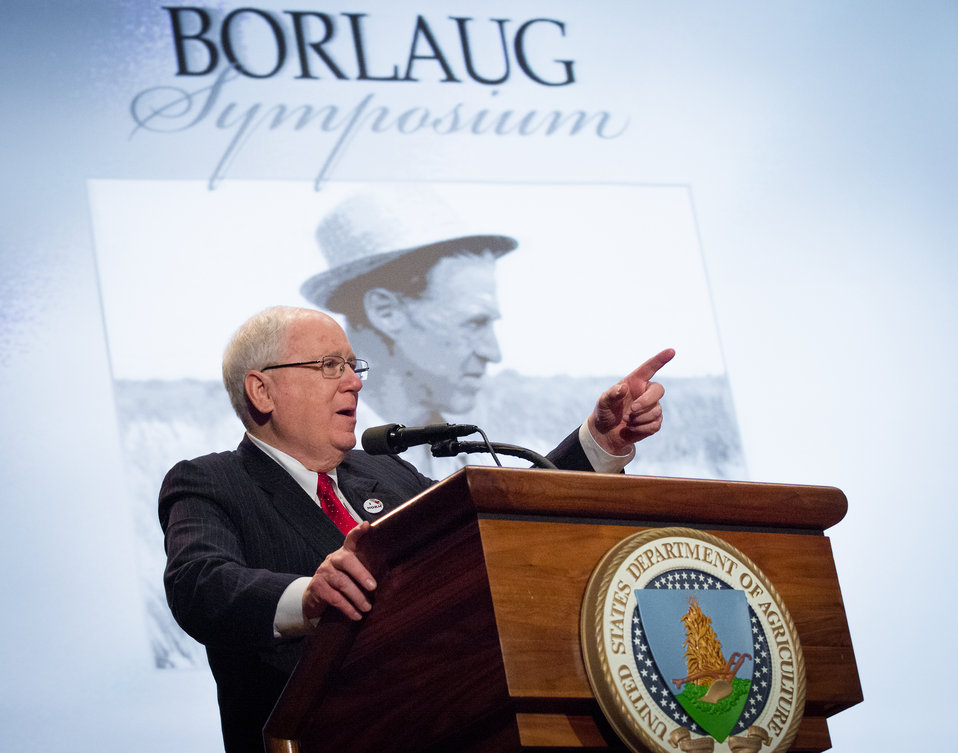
World Food Prize Ambassador Ken Quinn introduces the second panel moderator for the Borlaug Symposium Binghamton, NY high school student Nosa Akol, participates in the discussion panel titled 'I am Dr. Borlaug's Vision - I Can Make a Difference' during the Borlaug Symposium commemorating the late Dr. Norman E. Borlaug's 100th Birthday hosted by the U. S. Department of Agriculture (USDA) in the Jefferson Auditorium of USDA in Washington, D.C. on Tuesday, Mar. 25, 2014. The symposium highlighted current efforts addressing global hunger.